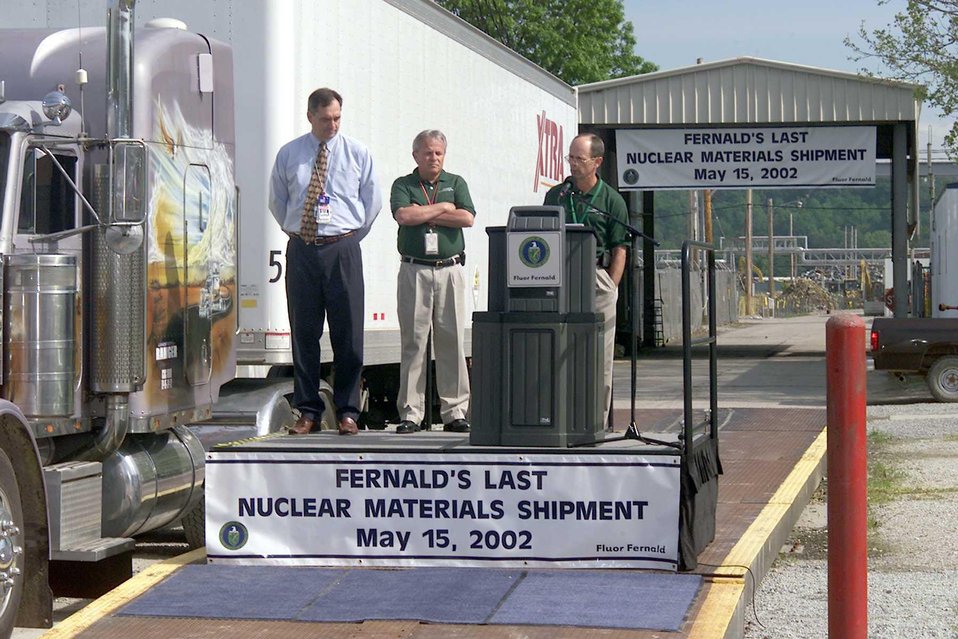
FERNALD ENVIRONMENTAL MANAGEMENT PROJECT COMMEMORATING THE LAST SHIPMENT OF NUCLEAR MATERIALS OFF SITE.

ON MAY 15, 2002 FERNALD SHIPPED THE LAST TRUCKLOAD OF NUCLEAR MATERIALS OFF SITE, A CRITICAL STEP IN ACHIEVING SITE CLOSURE BY THE END OF 2006. STEVE MCCRACKEN (PODIUM) CONGRATULATES FERNALD WORKERS WHO SAFELY PACKAGED AND SHIPPED 9.1 MILLION LBS. OF URANIUM FROM FERNALD TO DOE'S PORTSMOUTH GASEOUS DIFFUSION PLANT, PIKETON, OHIO FOR INTERIM STORAGE. OVER 760 LOADS OF DEPLETED, NORMAL, AND ENRICHED URANIUM PRODUCTS MADE THE 120 MILE TRIP FROM FERNALD TO PORTSMOUTH.